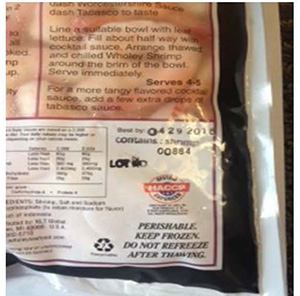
RECALLED – Shrimp (Wholey Peeled, Cooked, Tail-On 31/40)

July 27, 2013 – Product Recall – Lipari Foods Recalls Wholey Peeled Cooked Tail-on 31/40 Count Shrimp Because of Possible Health Risk.